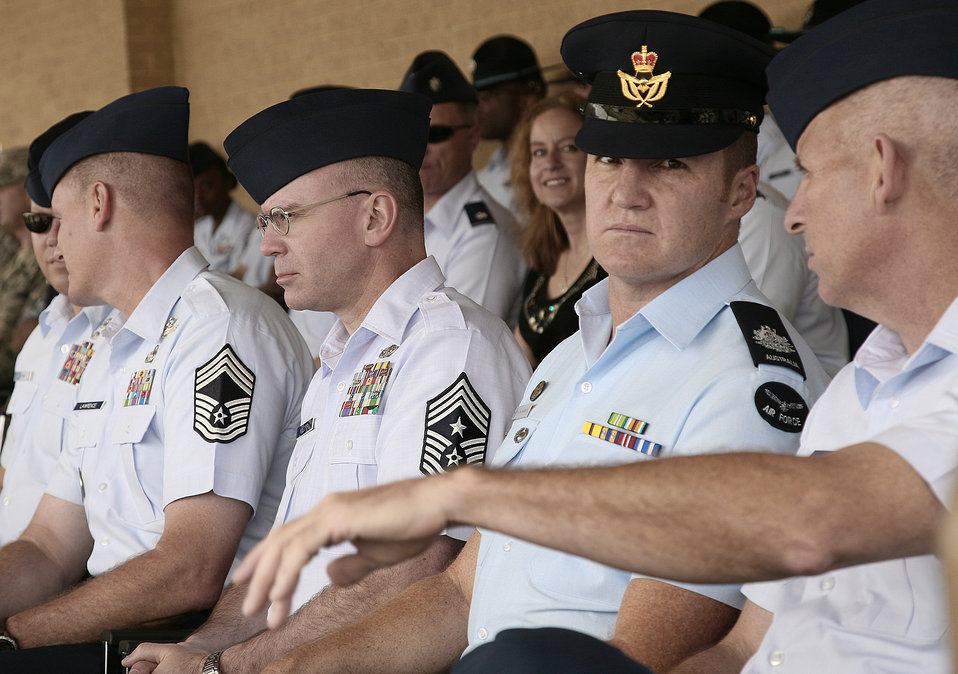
Senior enlisted leaders strengthen international bonds

Attendees from the Senior Enlisted Leader Summit view the Air Force Basic Military Training graduation parade May 15 at Lackland Air Force Base, Texas.